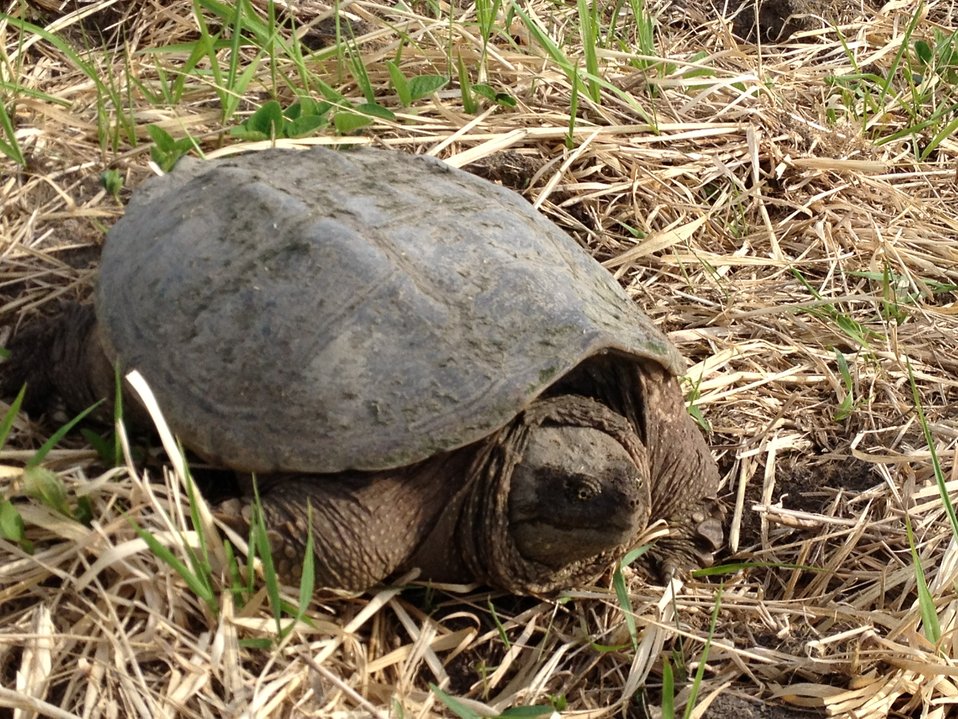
Snapping Turtle